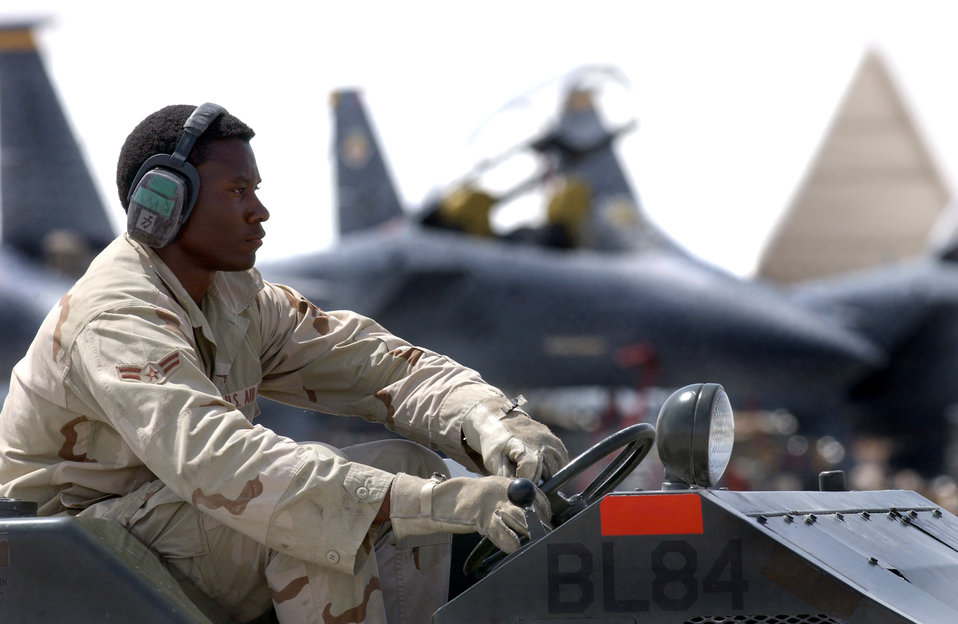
Jammer man

OPERATION IRAQI FREEDOM -- Airman 1st Class Jonathan Grandberry, a weapons troop assigned to the 379th Air Expeditionary Wing, drives a jammer loading GBU-10s on F-15E Strike Eagles at this forward deployed location in the Gulf region in support of Operation Iraqi Freedom.